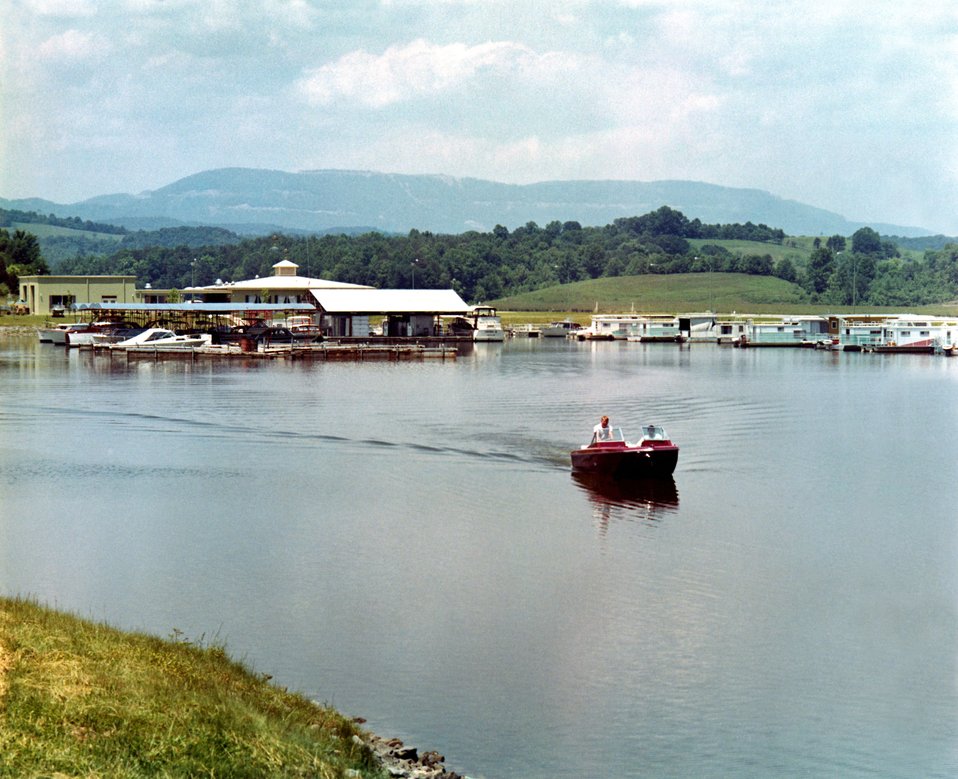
Oak Ridge Marina 1968

68-314 DOE photo Frank Hoffman 6-1968 Oak Ridge Tennessee